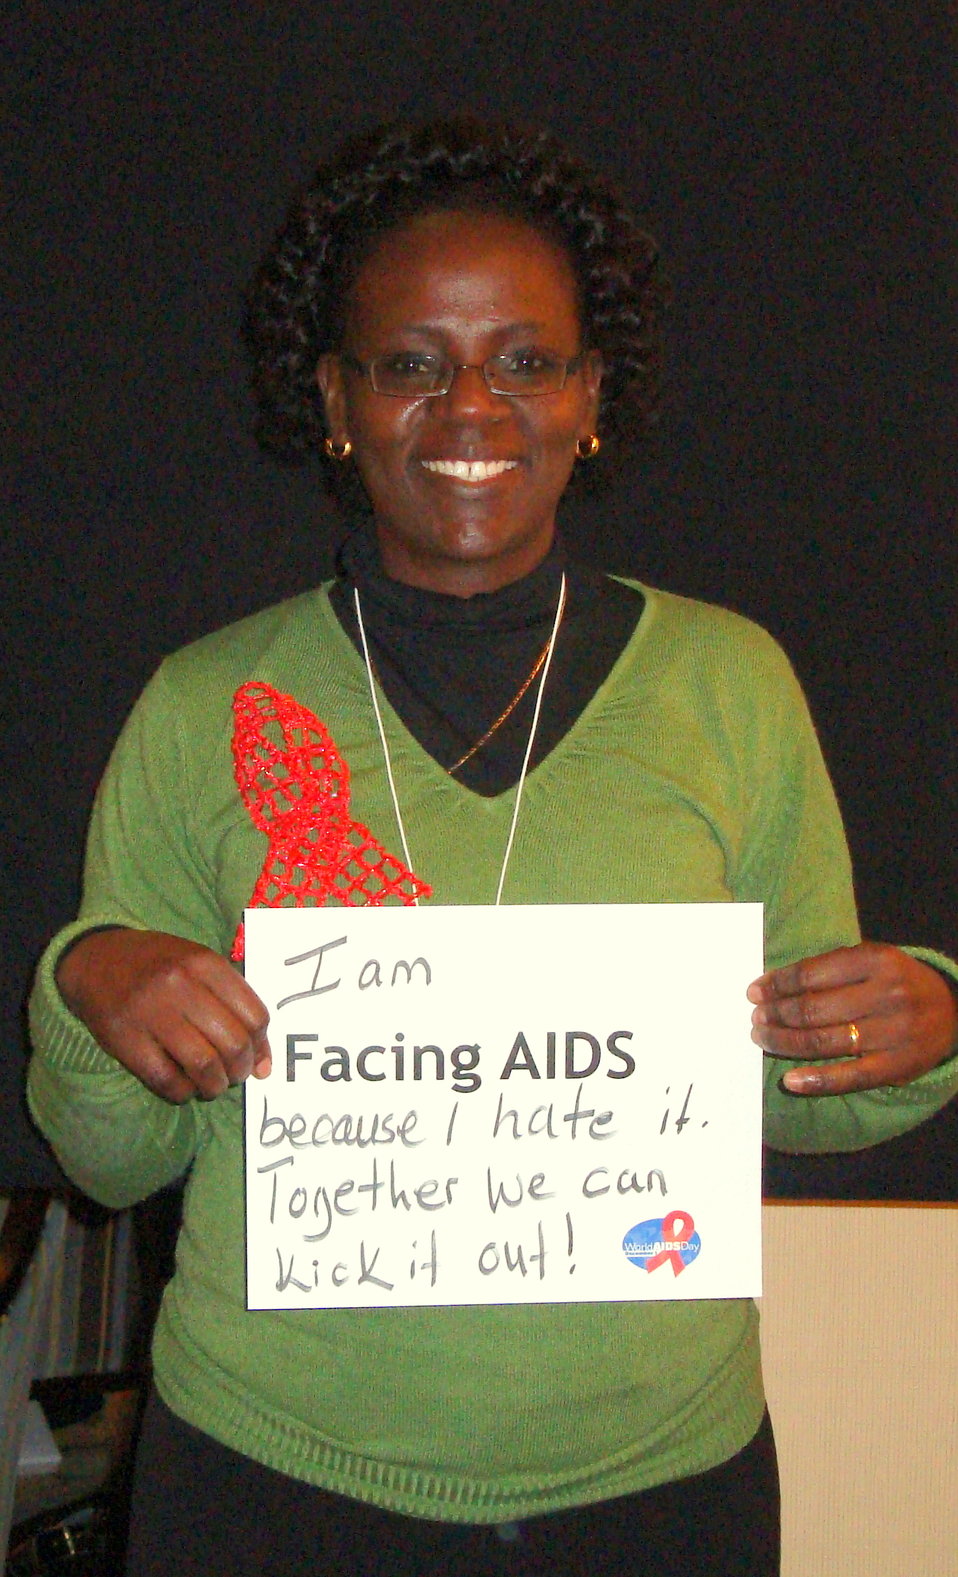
FacingAIDSCampaign 013